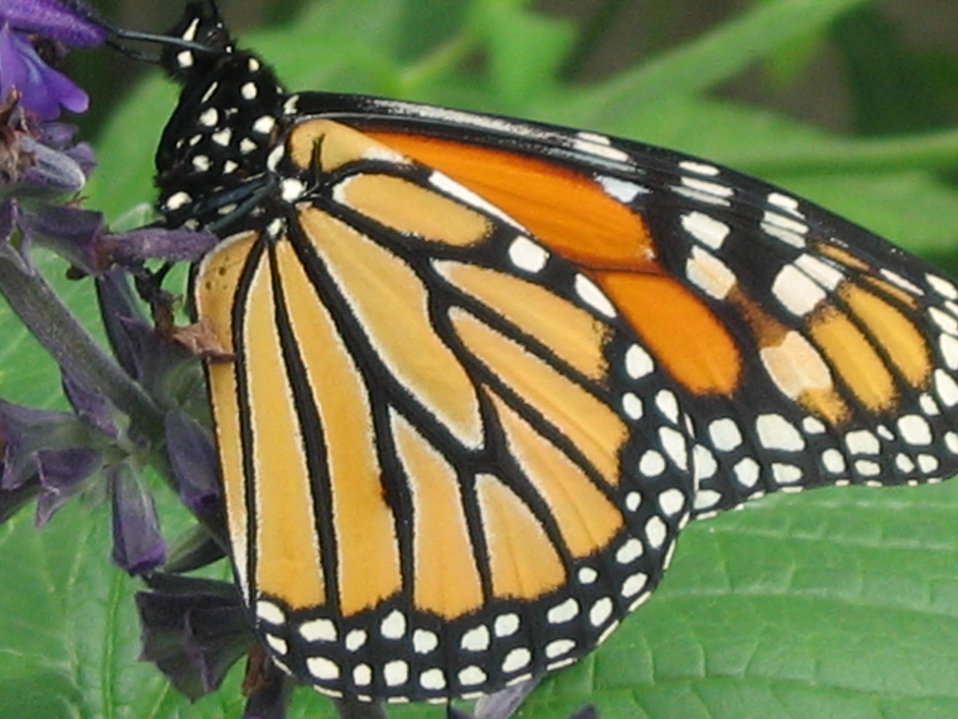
An image of a monarch butterfly taken on June 18, 2006. The monarch butterfly feeds on milkweed, a plant under attack from milkweed stem weevils.